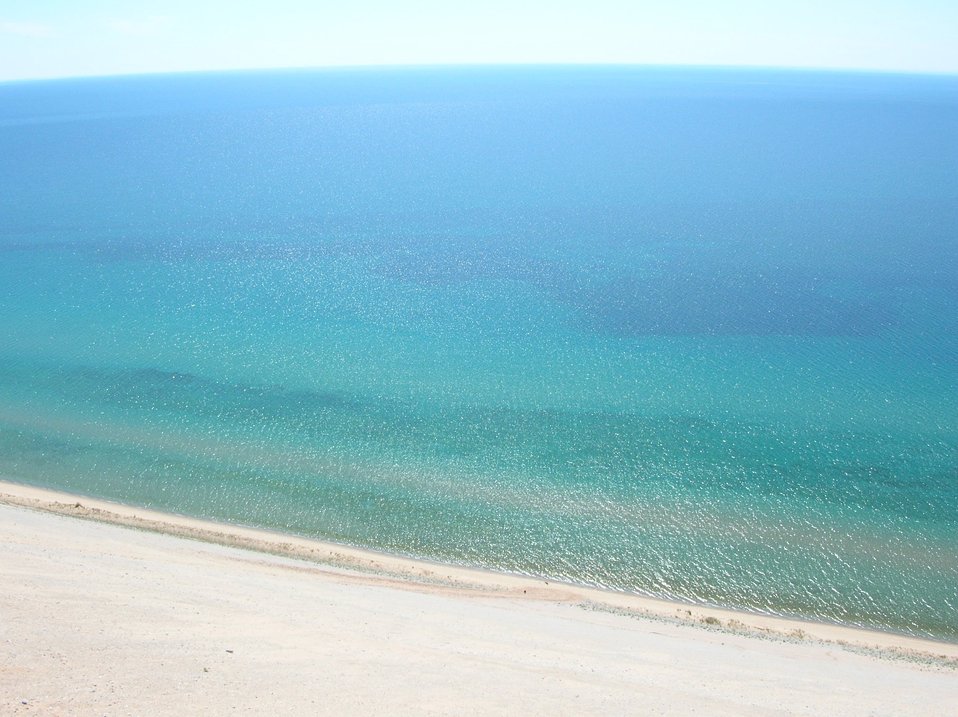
Pierce Stocking Overlook, Sleeping Bear Dunes